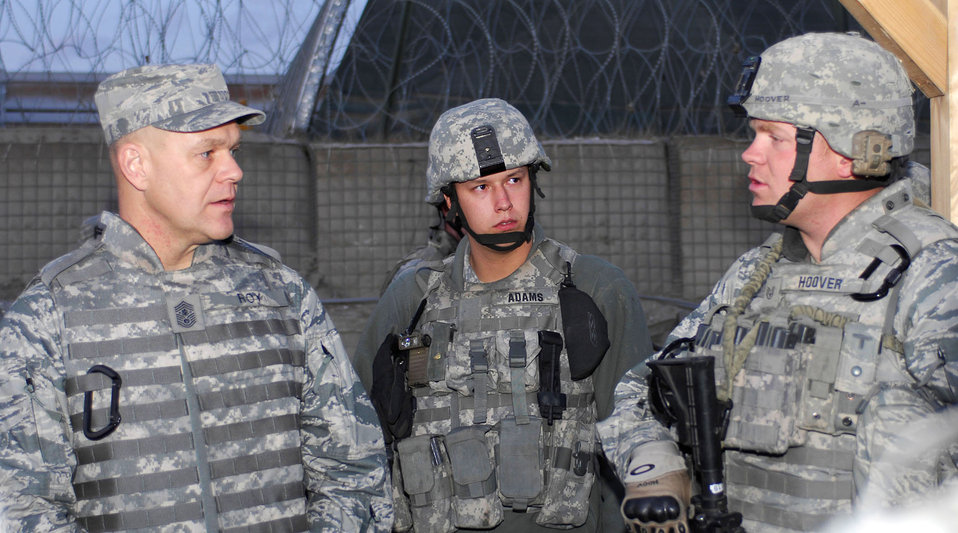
Chief Master Sgt. of the Air Force James A. Roy talks to Staff Sgt. Thomas Hoover Nov. 28, 2009, at Bagram Airfield, Afghanistan. Sergeant Hoover is assigned to the 455th Expeditionary Security Forces Squadron and is deployed from McChord Air Force Base, Wash.